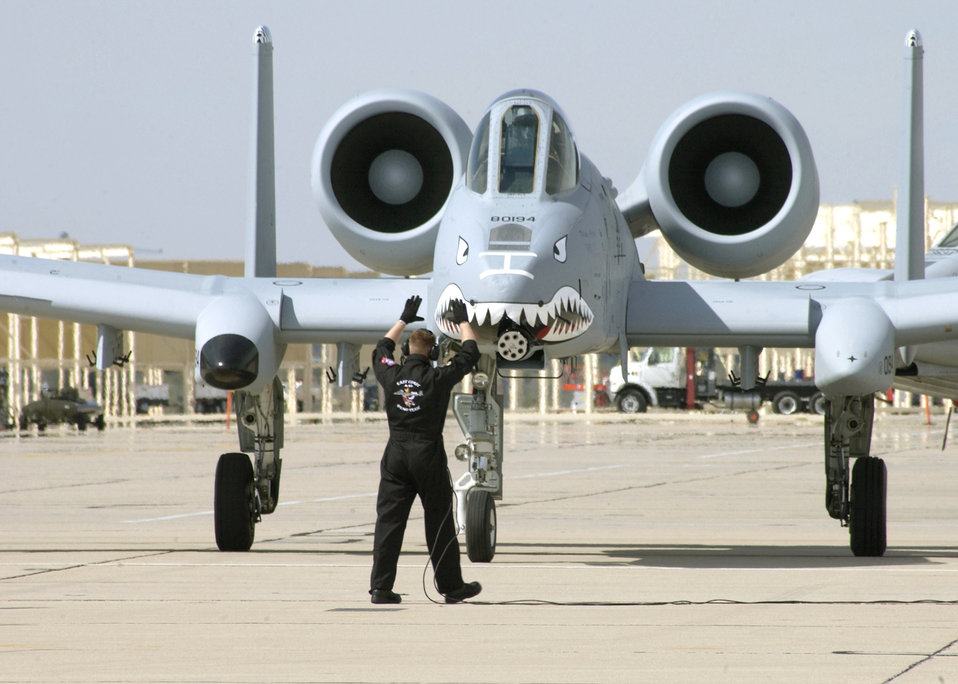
Keep your eyes on me

DAVIS-MONTHAN AIR FORCE BASE, Ariz. -- An A-10 Thunderbolt II is marshaled in by an A-10 East Coast Demo Team Airman during the 2005 Heritage Flight Conference here. The Heritage Flight program was established in 1997 supporting the Air Force's 50th anniversary. It involves today's state-of-the-art fighters flying in close formation with World War II and Korean War vintage fighters. The flight is designed to safely display the evolution of U.S. Air Force airpower and support Air Force's recruiting and retention efforts.